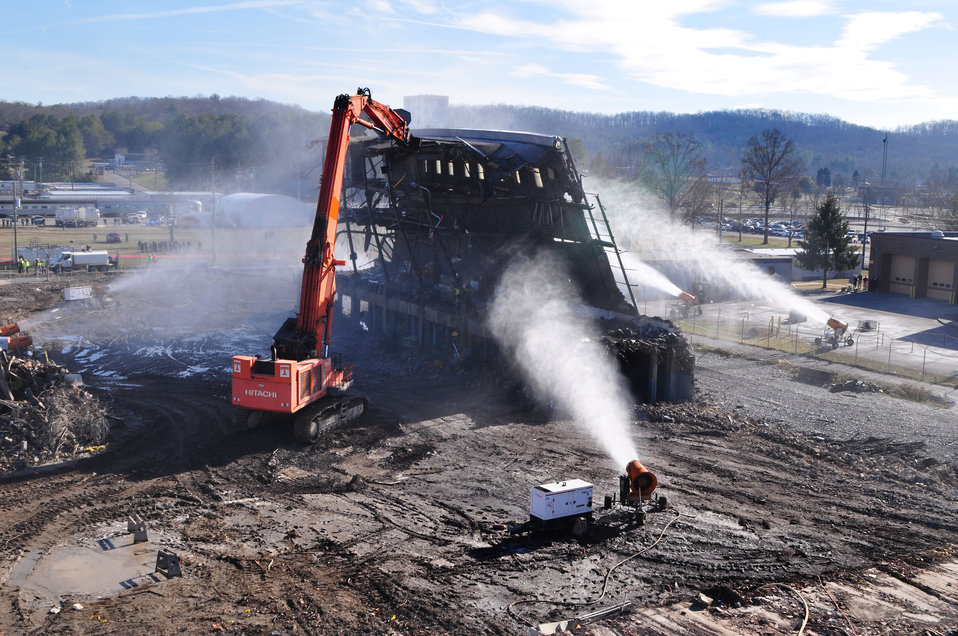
Last Part of K-25 Coming Down Oak Ridge 2013

13-157-1 DOE photo Lynn Freeny 12-19-2013 Oak Ridge Tennessee